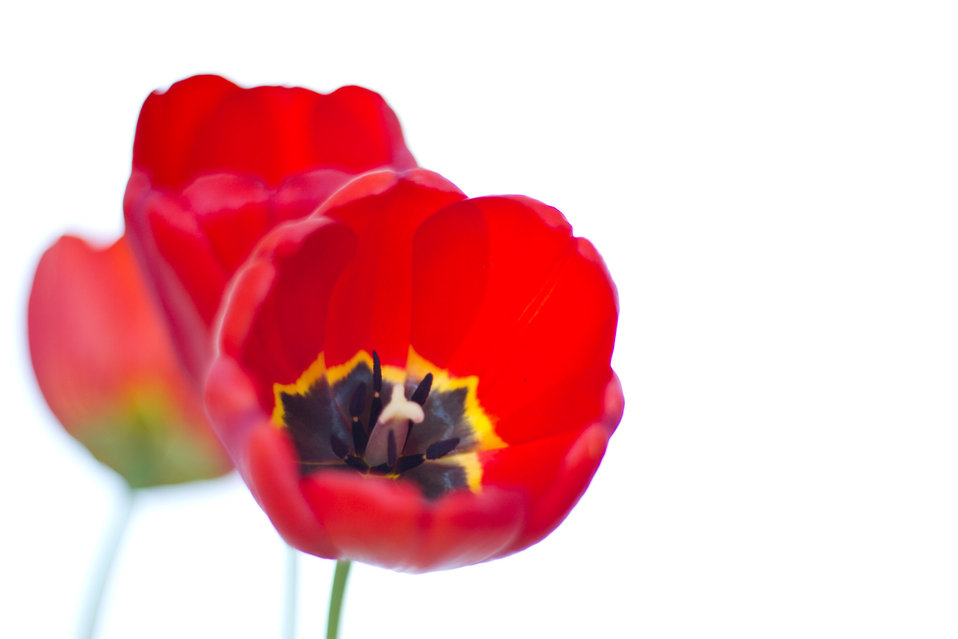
Red tulips in vase.